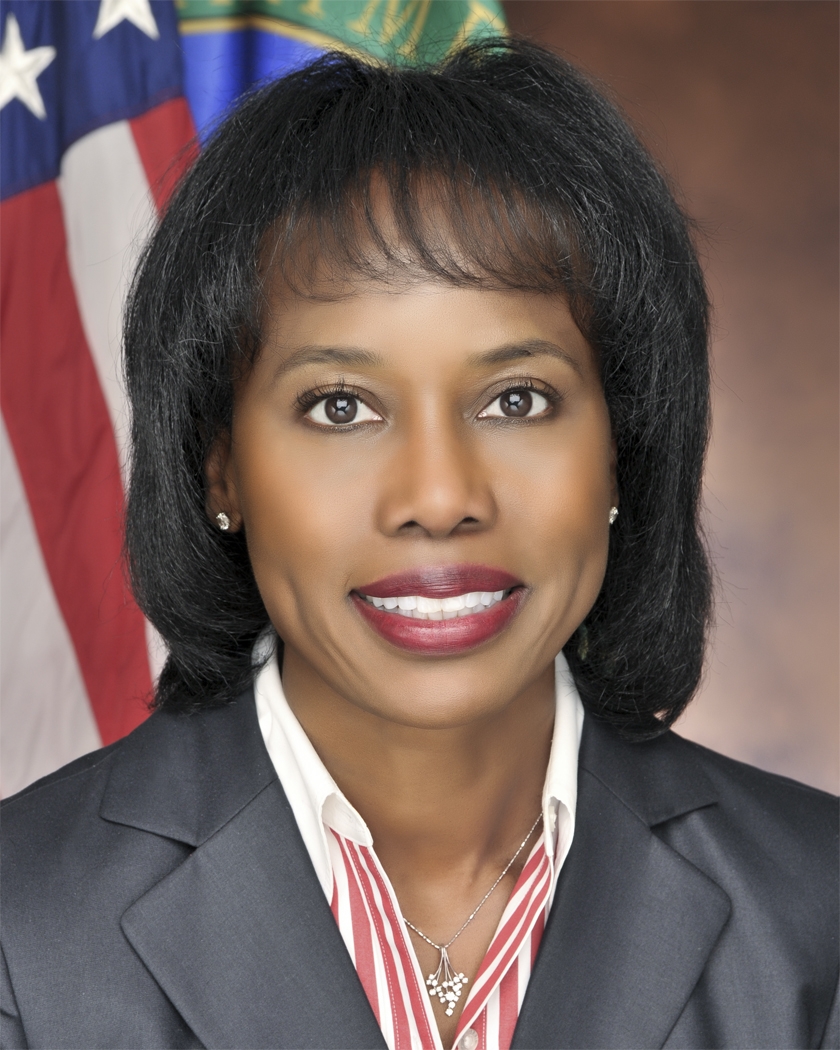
Dot Harris, Director, Office of Economic Impact and Diversity